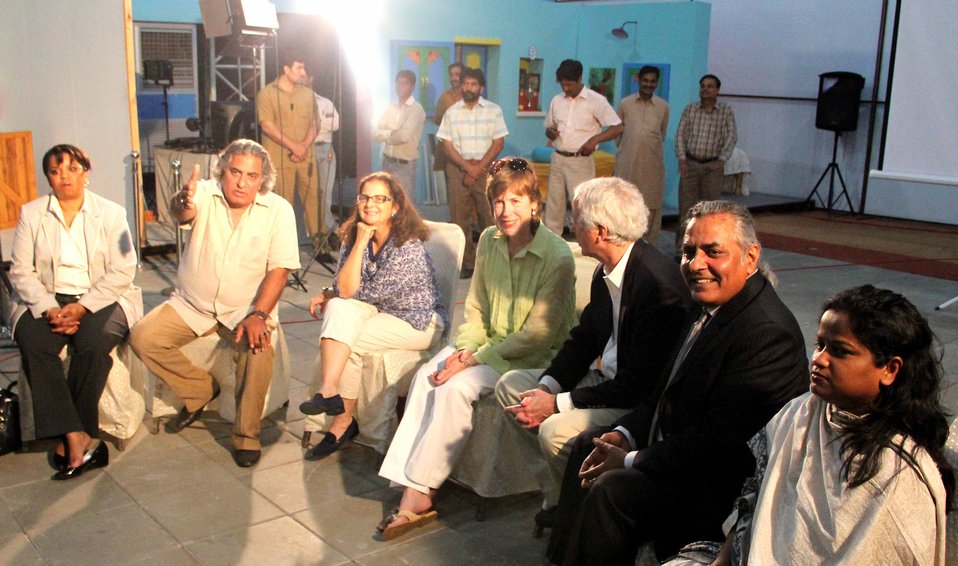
U.S. Ambassador’s Visit to Sim Sim Hamara Highlights U.S. Commitment to Improved Children’s Education in Pakistan at Lahore on 28 April, 2012

Usman Peerzada telling about the set to mr. cameron munter